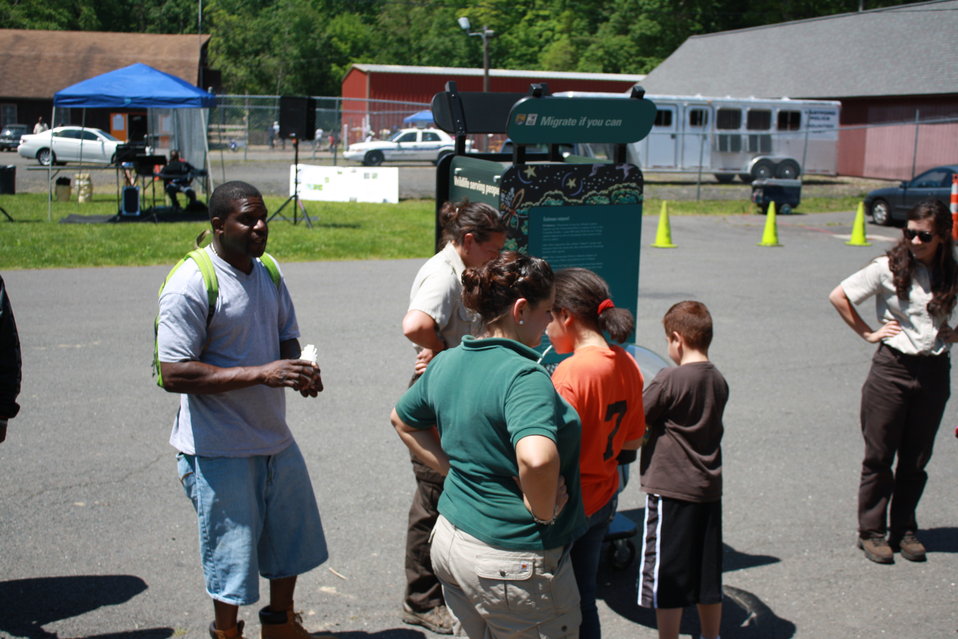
Exhibits at the WOW Express

WOW Express at Keney Park in Hartford, Conn.